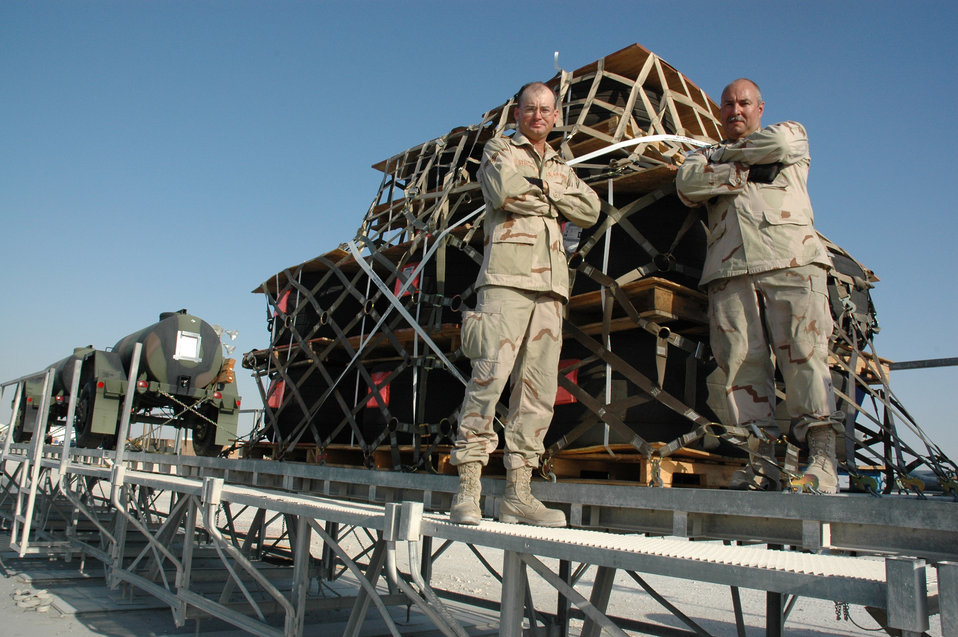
8th Expeditionary Air Mobility Squadron thinks lean

Senior Airman Jayson Steelman (left) and Staff Sergeant Michael Key, along with other Airmen in the 8th Expeditionary Air Mobility Squadron, developed a more efficient way to palletize aircraft tires which will save the Air Force some $14,700 a month. Sergeant Key and Airman Steelman are Texas Air National Guardsmen deployed to the 8th EAMS in Southwest Asia.